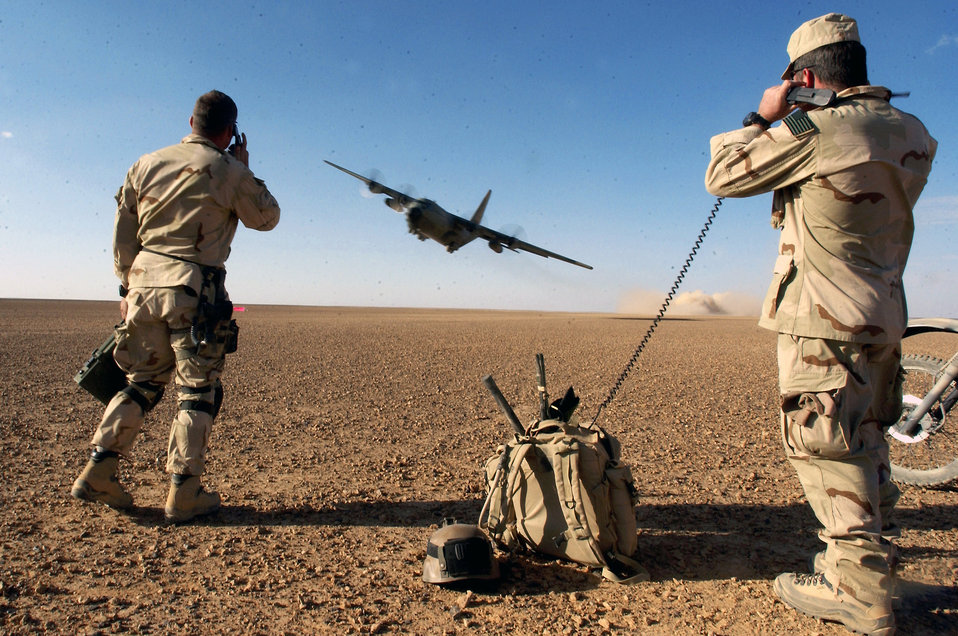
You're cleared for take-off

Air Force Special Operations Command combat controllers give a C-130 Hercules take off clearance and provide air traffic control during a mission to establish and assess an airfield March 15 at a forward deployed location in support of Operation Enduring Freedom.